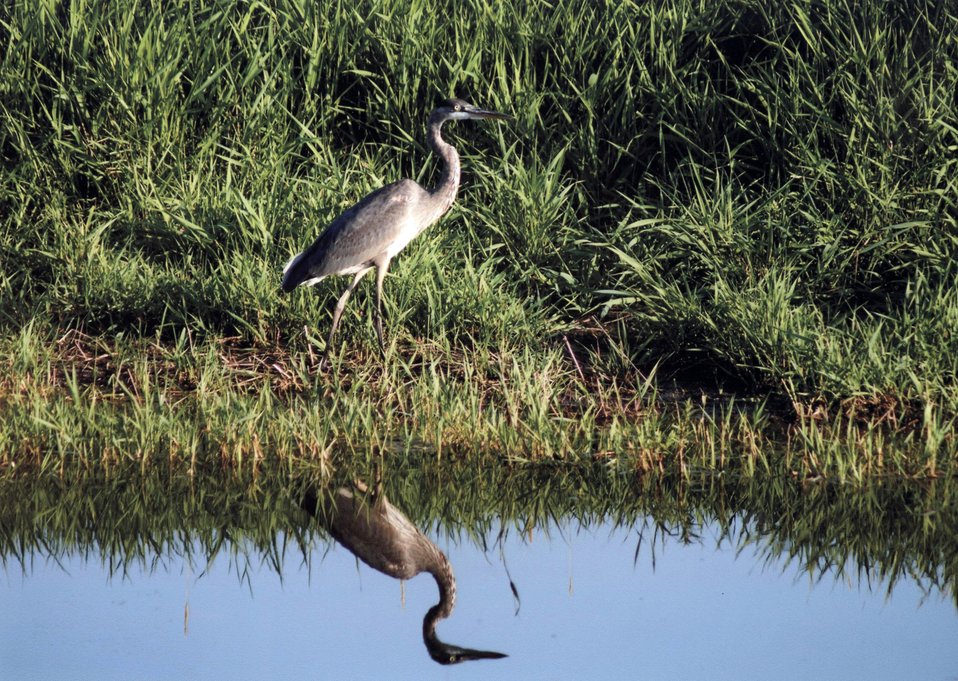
Who's That

Photo by Brenda Lister/USFWS.

Shiawassee National Wildlife Refuge 2013 Photo Contest